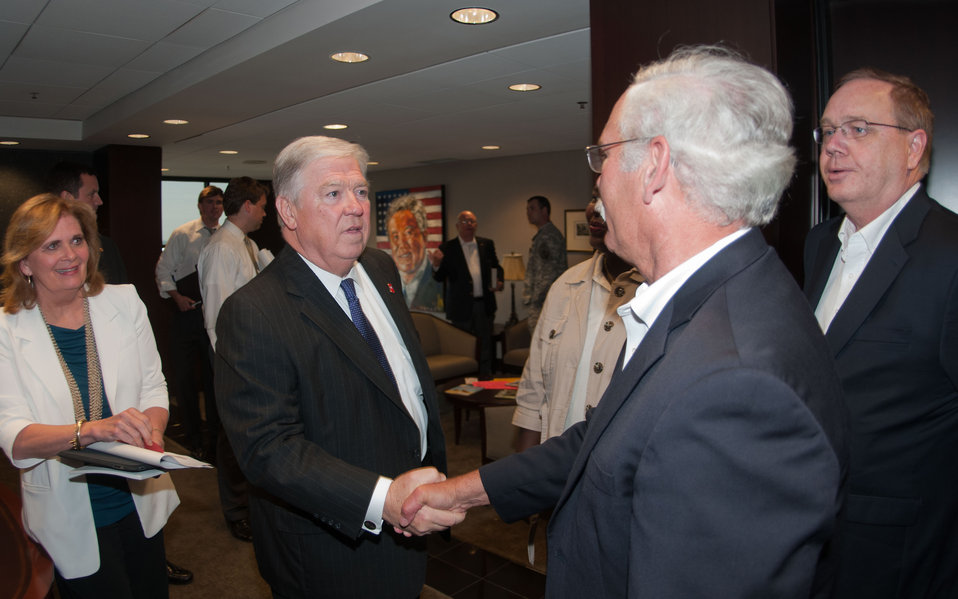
Mississippi Governor Haley Barbour (center left) welcomes U.S. Department of Agriculture Acting Under Secretary Farm and Foreign Agriculture Service Michael Scuse (center right) and Undersecretary for Rural Development Dallas Tonsager (right) to his offices to attend emergency taskforce meetings for farming and housing (respectively).